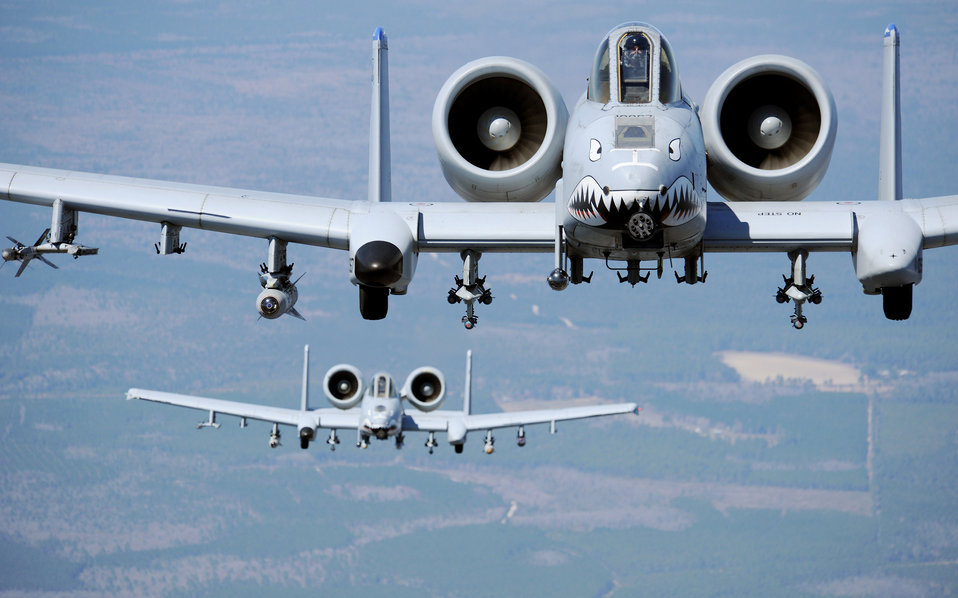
Feeling lucky?

Two A-10C Thunderbolt II aircraft fly a flight training mission March 16, 2010, over Moody Air Force Base, Ga. The A-10C is the first Air Force aircraft specially designed for close-air support of ground forces.